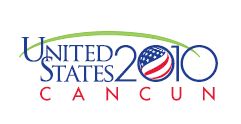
U.S. Center COP-Logo

This is the official logo for the U.S. Center at the 16th Session of the Conference of the Parties to the UN Framework Convention on Climate Change from November 29 through December 10, 2010, in Cancun, Mexico.